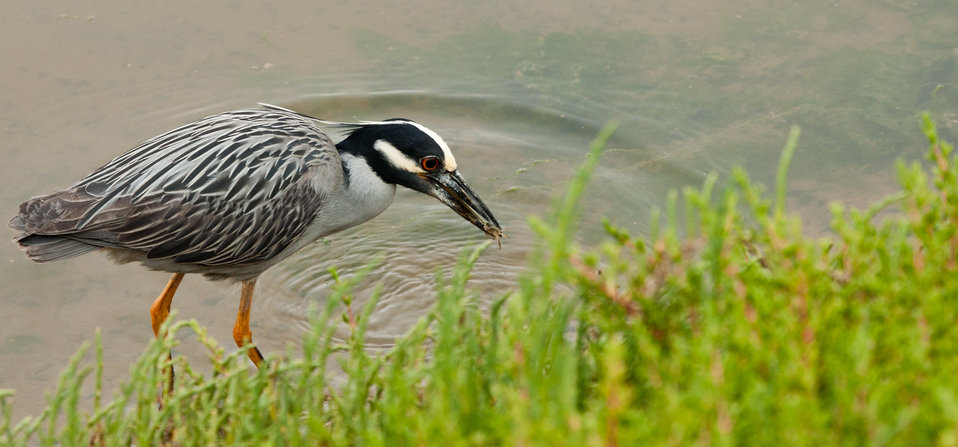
Yellow crowned night heron (Nyctanassa violacea) catching a crab

This night heron is considered by some birders as rare here in the marshes of Southern California